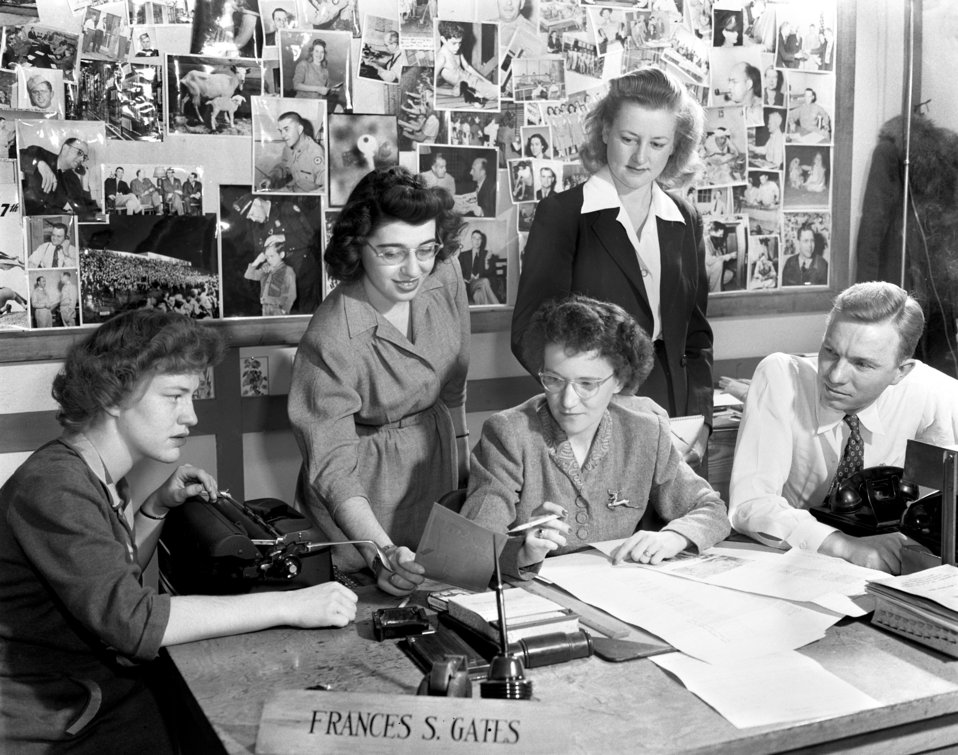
Oak Ridge Journal Staff 1947

3320-2 DOE photo Ed Westcott 2-28-1947 L to R Lucia Carter, Nancy Fowler, Francis Gates, Shirley Smith and Richard Johnson Oak Ridge Tennessee